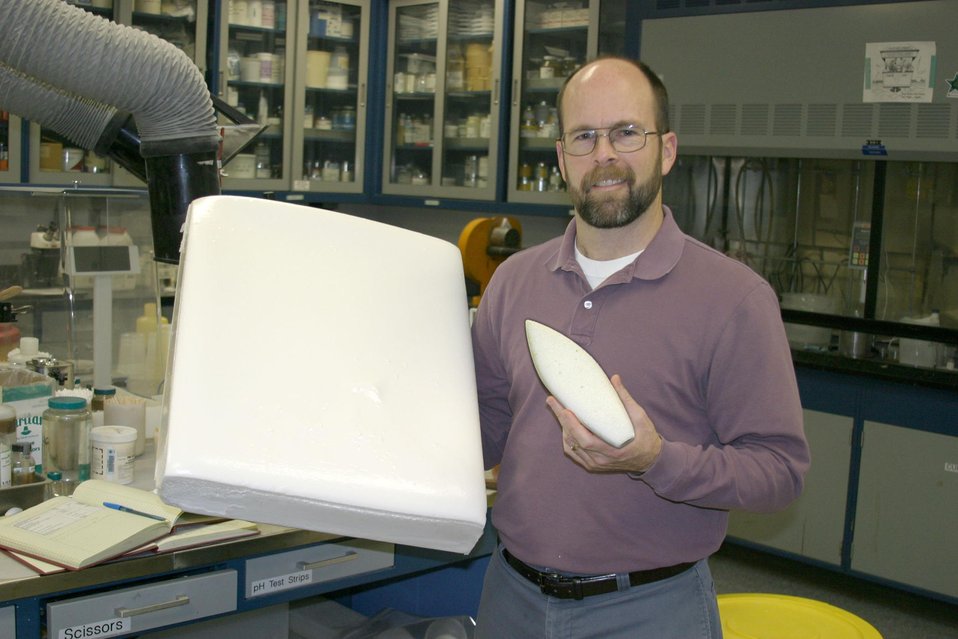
SANDIA RESEARCHER WITH SAMPLES OF THE TUFFOAM.

THE TUFFOAM WAS ORIGINALLY INVENTED BY SANDIA SCIENTSTS FOR THE NATIONAL NUCLEAR SECRUITY ADMINISTRATION AS AN ENCAPSULATED MATERIAL TO PROTECT SENSITIVE ELECTRONIC AND MECHANICAL STRUCTURES FROM HARSH WEAPONS ENVIRONMENTS. IT IS A LOW-DENSITY, ENVIRONMENTALLY FRIENDLY FOAM. THE MATERIAL CAN BE USED FOR THERMAL AND ELECTRICAL INSULATION. SOME COMMON USES ARE CAR BUMPERS AND AIRPLANE WINGS. THE TUFFOAM IS COMMERCIALLY AVAILABLE.